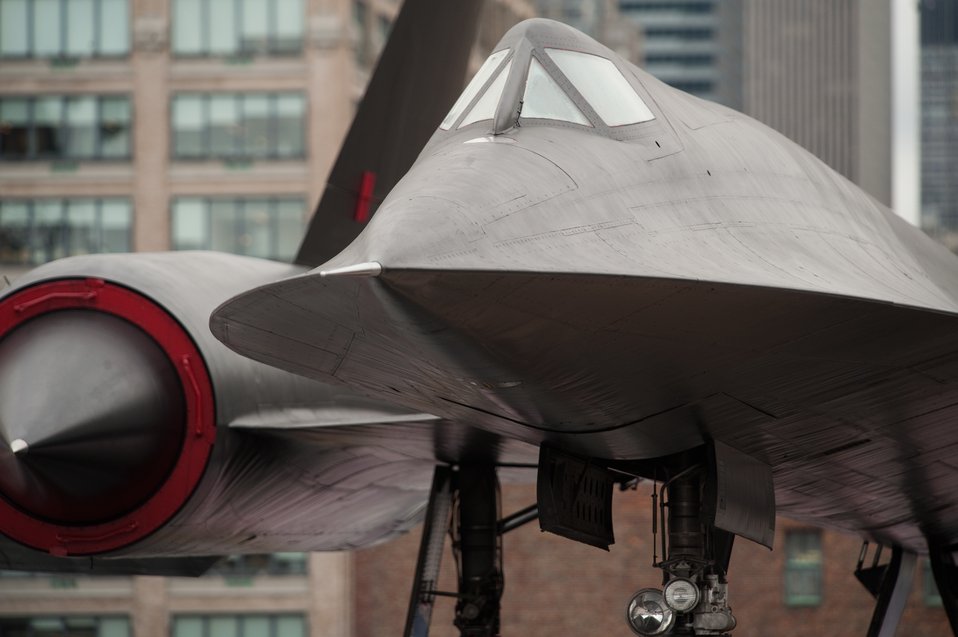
Opening ceremony for Air Force Week

At the Air Force Week New York City proclamation ceremony, an A-12 reconnaissance aircraft, the predecessor to the Air Force's SR-71, is on display on the USS Intrepid Sea, Air and Space Museum Aug. 24, 2010.